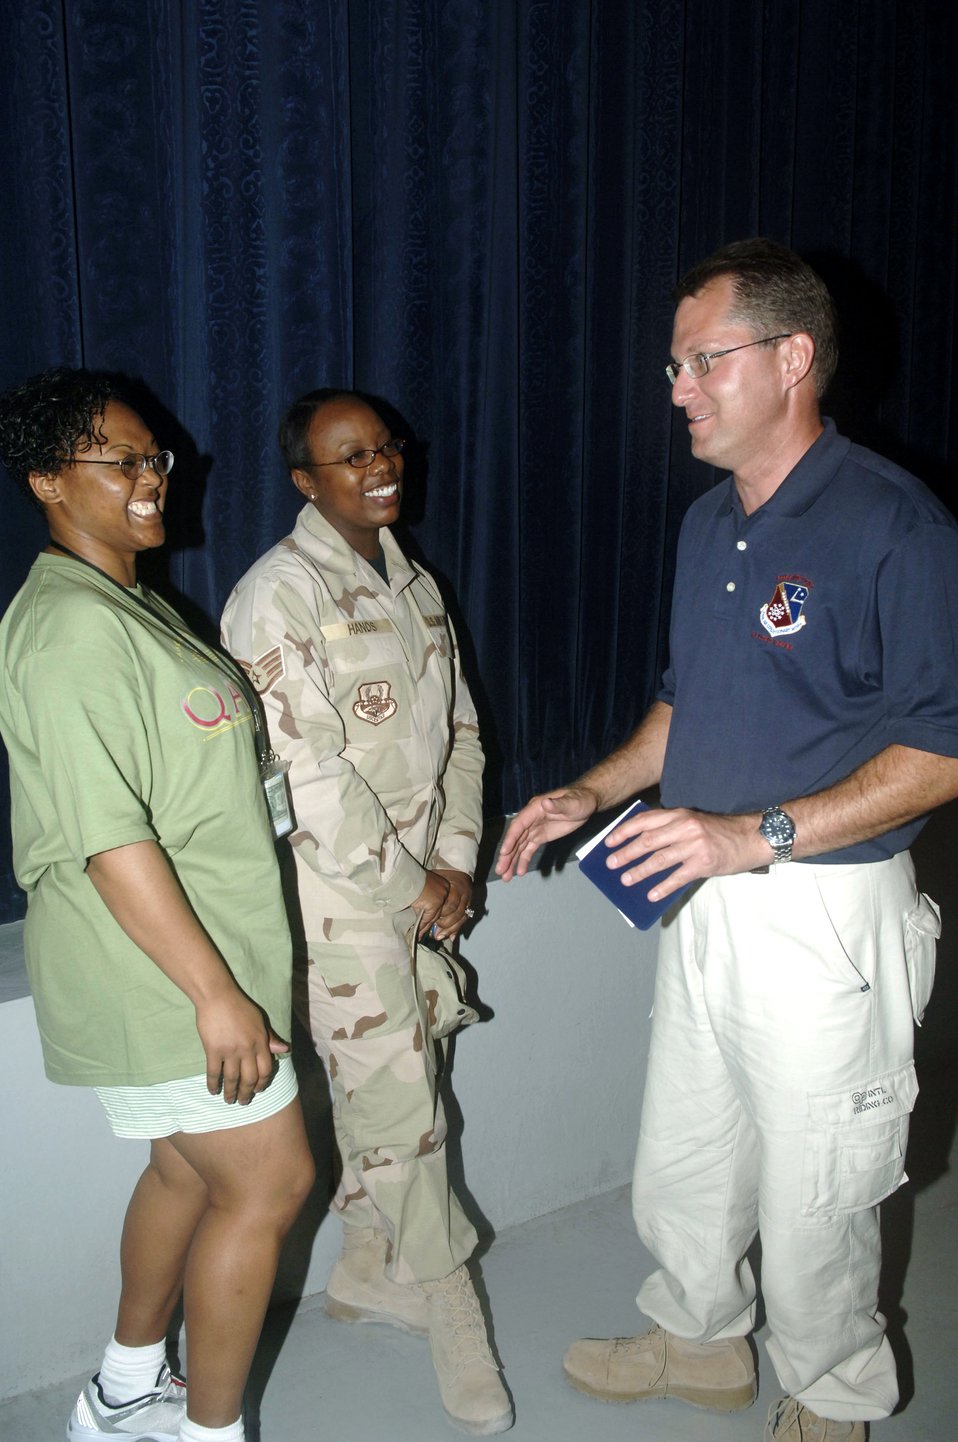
Author, activist speaks with Airmen

Author and activist Dave Pelzer speaks with Staff Sgts. Janeia Williams-Bowen (left) and Yolanda Hands after his speech to Airmen at a base in Southwest Asia on Tuesday, June 27. Mr. Pelzer visited troops in Southwest Asia to spread words of encouragement and forgiveness.